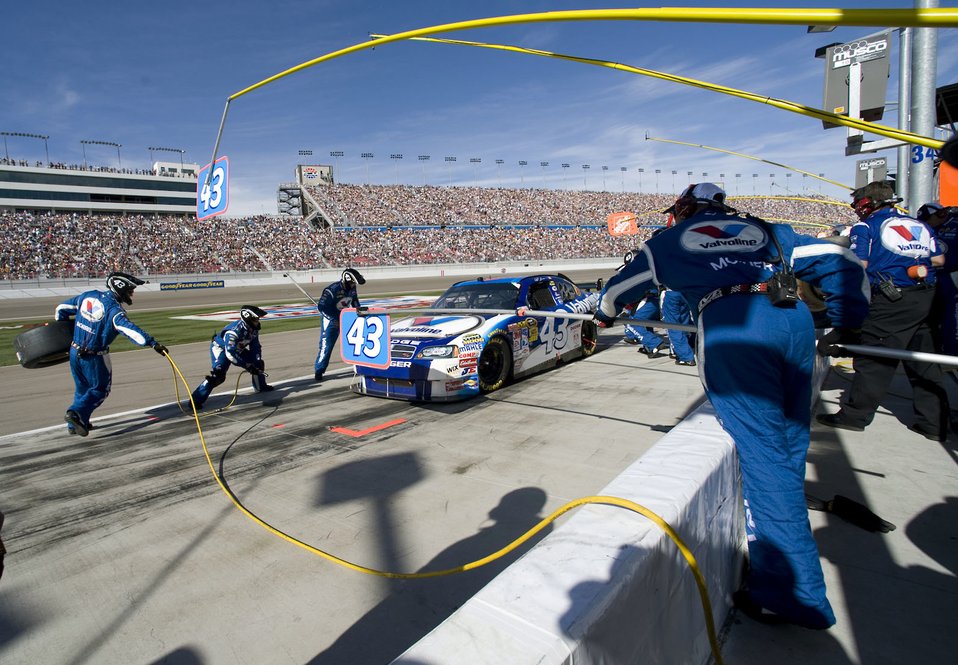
Air Force teams with NASCAR to aid recruiting

Reed Sorenson pulls into the pits on lap 61 of the Shelby 427 race March 1 at the Las Vegas Motor Speedway. Mr. Sorenson, driver of the No. 43 Air Force sponsored Dodge, finished the race in 34th place after spinning in turn two on lap 138.